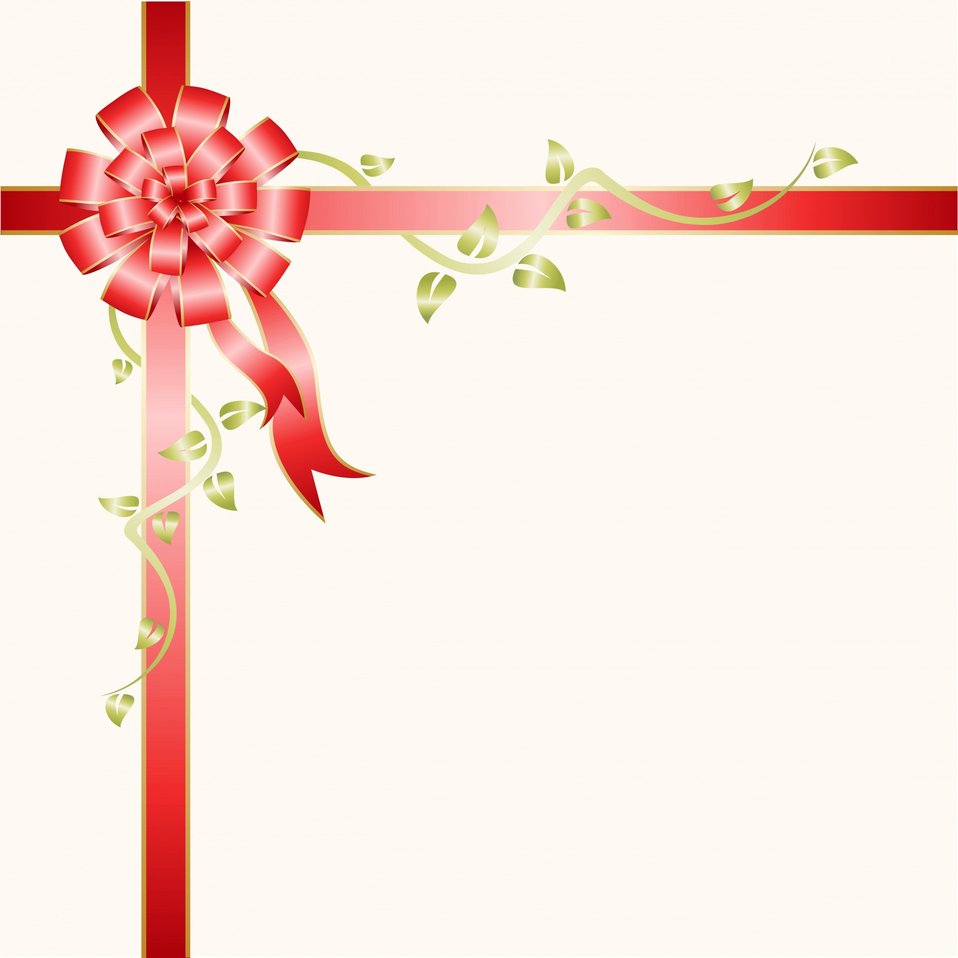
Background with a bow

White background with a red bow.